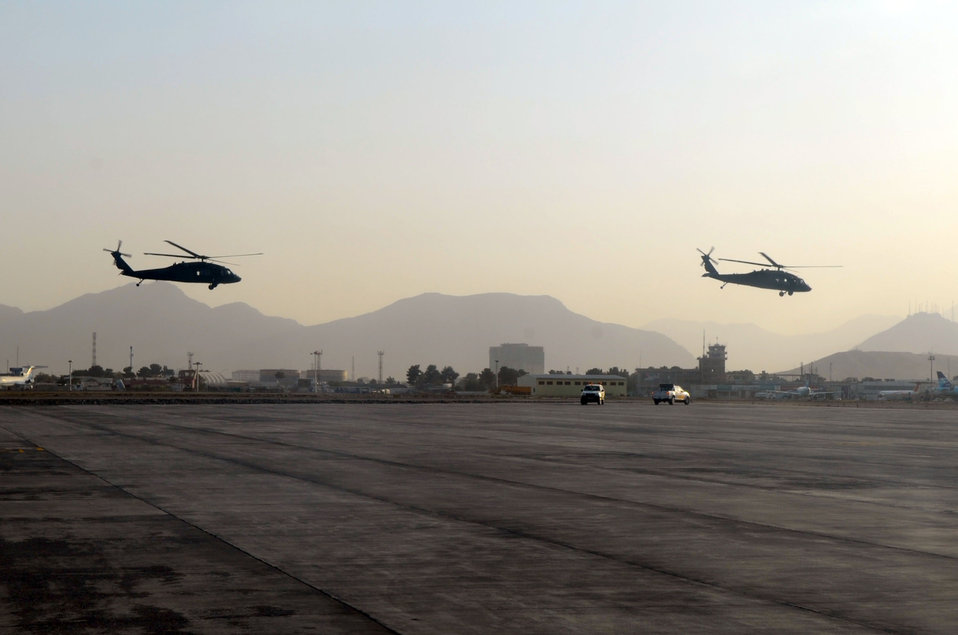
Secretary Kerry Travels To Meet With Afghan President Karzai

U.S. Secretary of State John Kerry and his traveling party take off for a meeting in Kabul, Afghanistan, with Afghan President Hamid Karzai on October 11, 2013.